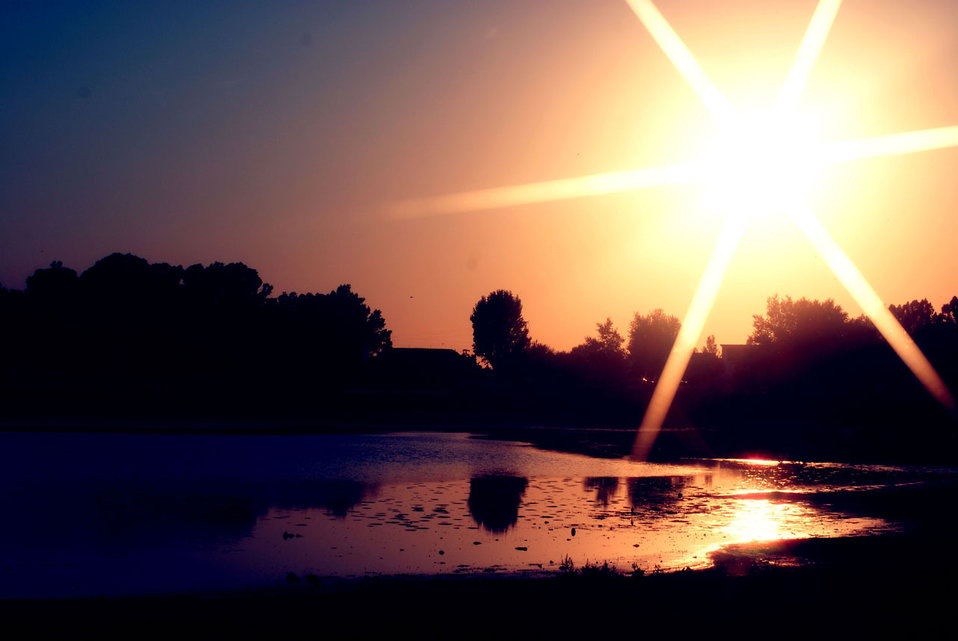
Sunset on the rocio

Sun in the marshes of rocio.